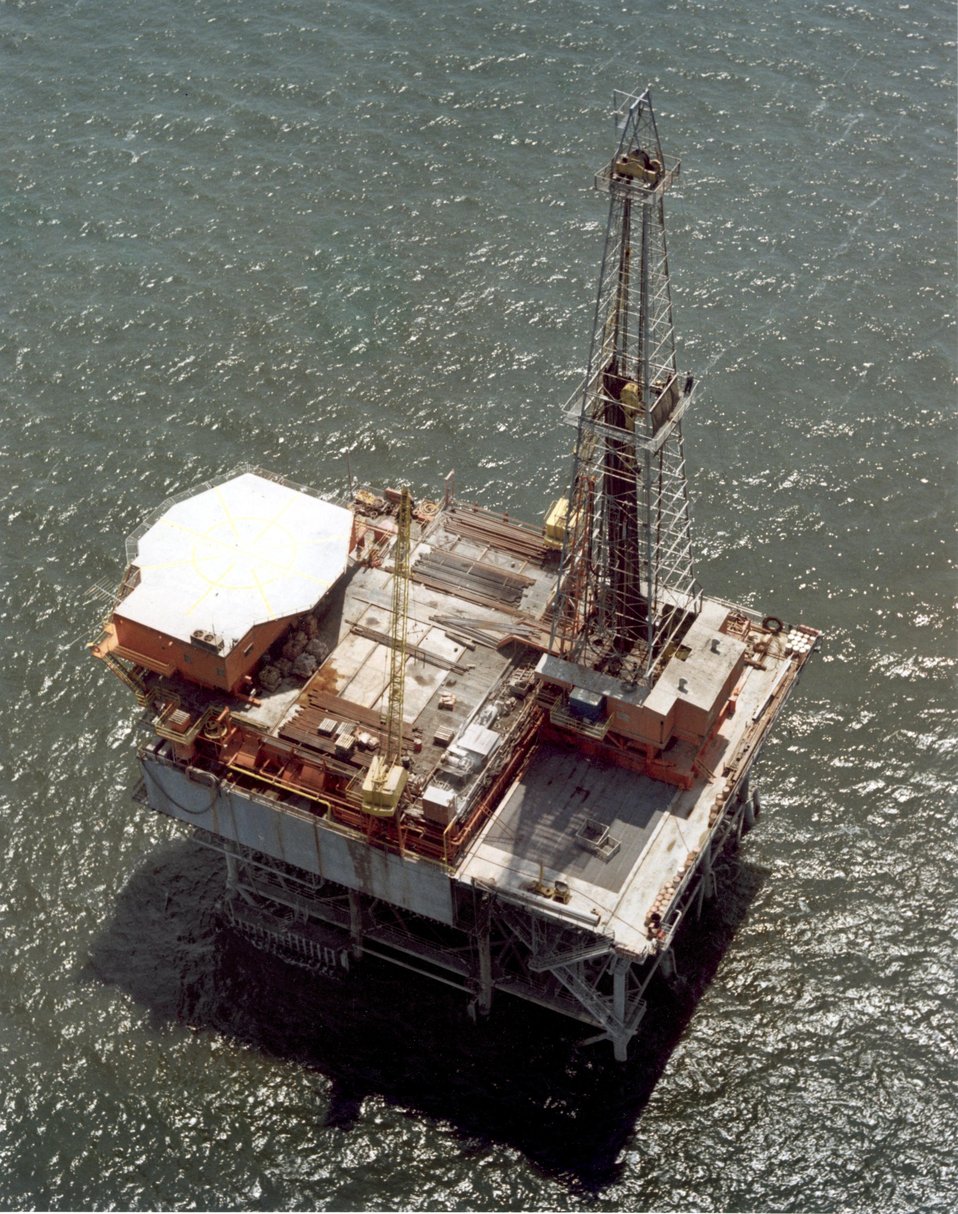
Offshore drilling. c. 1968